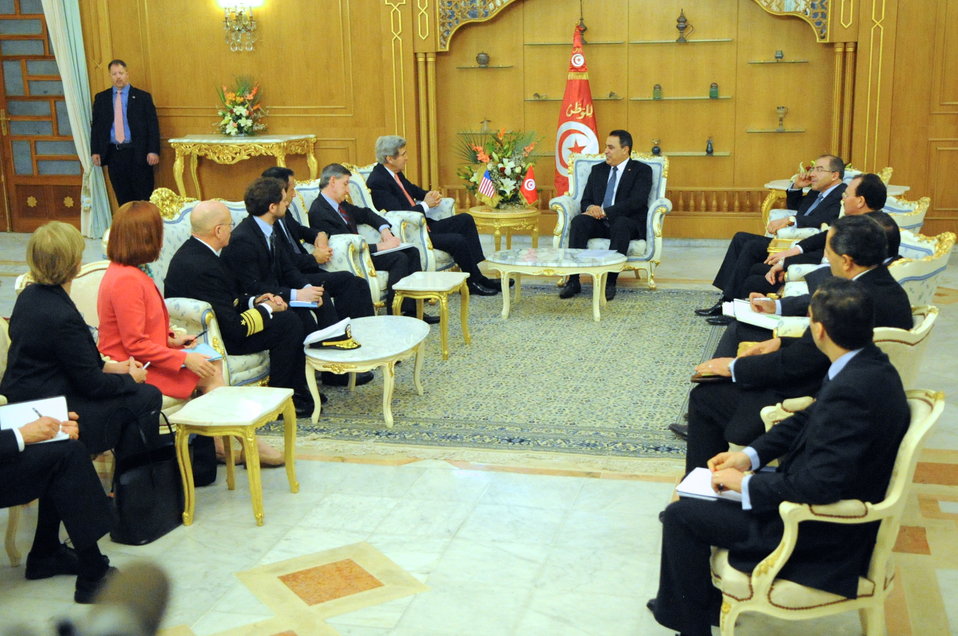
Secretary Kerry Meets With Tunisian Prime Minister Joma'a

U.S. Secretary of State John Kerry and his delegation meet with Tunisian Prime Minister Mehdi Joma'a and his advisers at the Dar Diafa Palace in Carthage, Tunisia, on February 18, 2014.